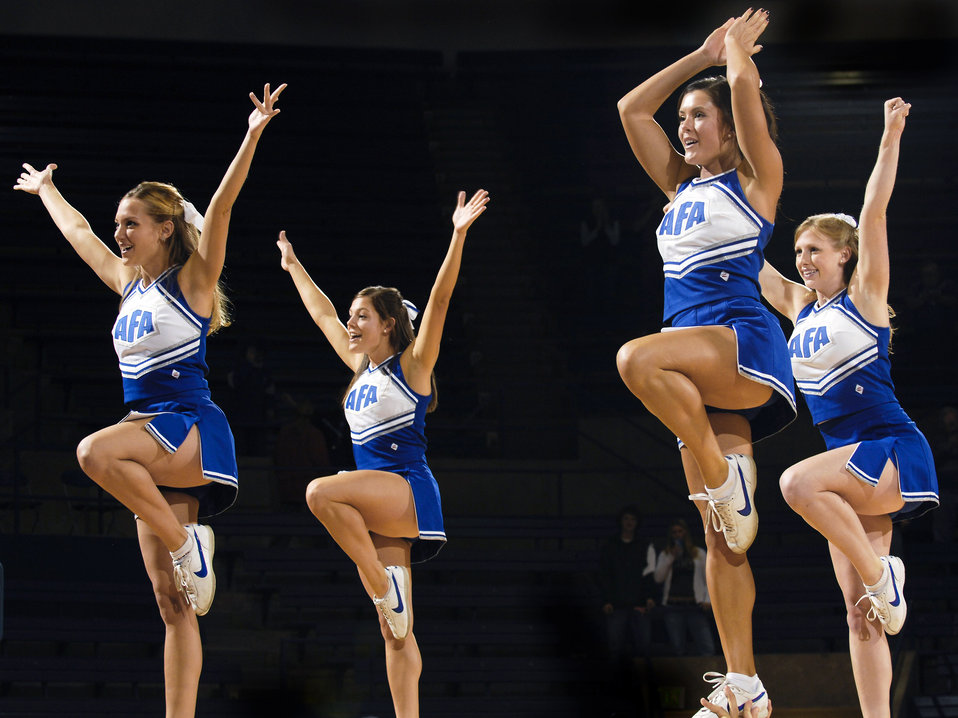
Go team!

Members of the U.S. Air Force Academy Blue Spirit squad cheer the Falcons during an exhibition basketball game with Brock University. The Falcons open the 2007-08 regular season on Nov. 9 in the Air Force Classic hosted by the Academy.